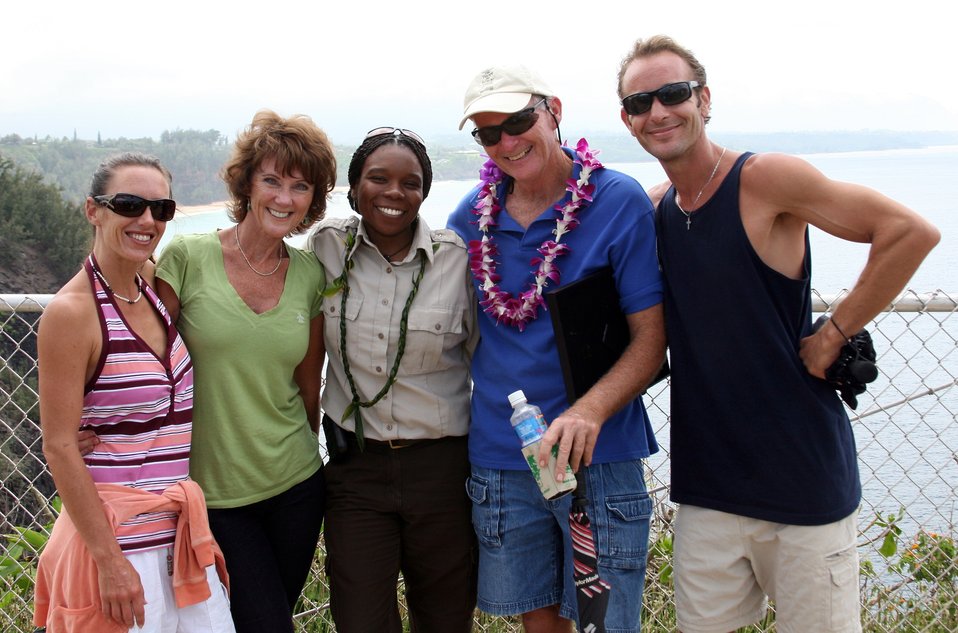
Shannon Smith with long-time Kilauea volunteers

Shannon Smith, refuge manager at Kaua'i National Wildlife Refuge Complex in Hawaii, poses with long-time Kilauea Volunteers on Lighthouse Day 2010. (USFWS)